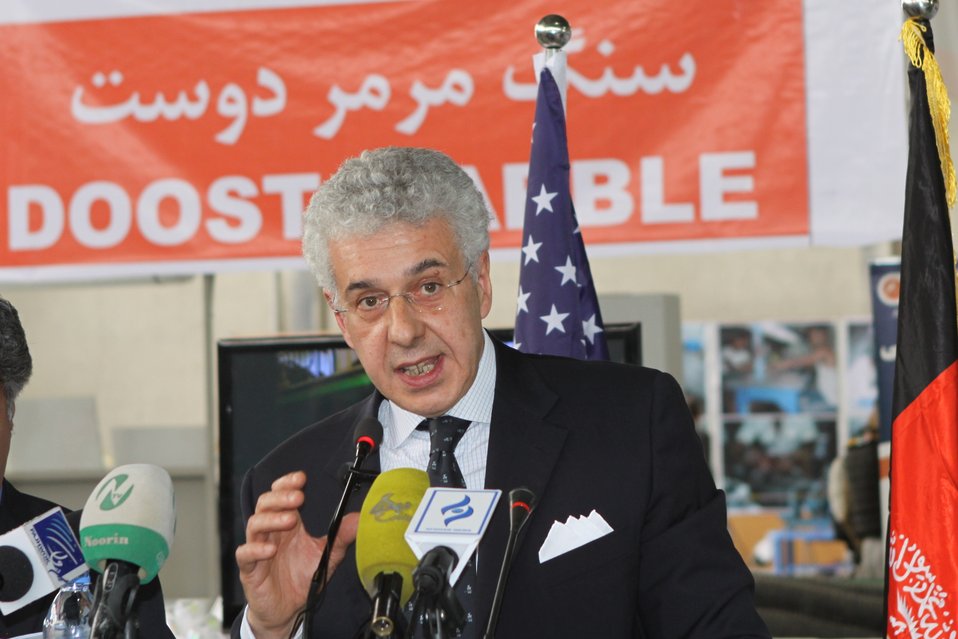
100525 Hirat Marble Conference 240